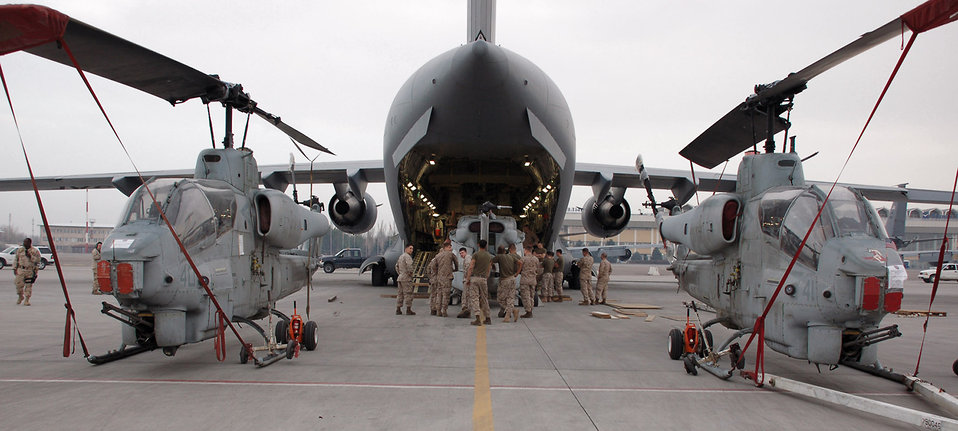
Packing them in

Marines with the 24th Marine Expeditionary Unit load three AH-1W Super Cobra helicopters onto an Air Force C-17 Globemaster III March 16 at Manas Air Base, Kyrgyzstan. The Marines are headed to Afghanistan as part of the NATO-International Security Assistance Force.